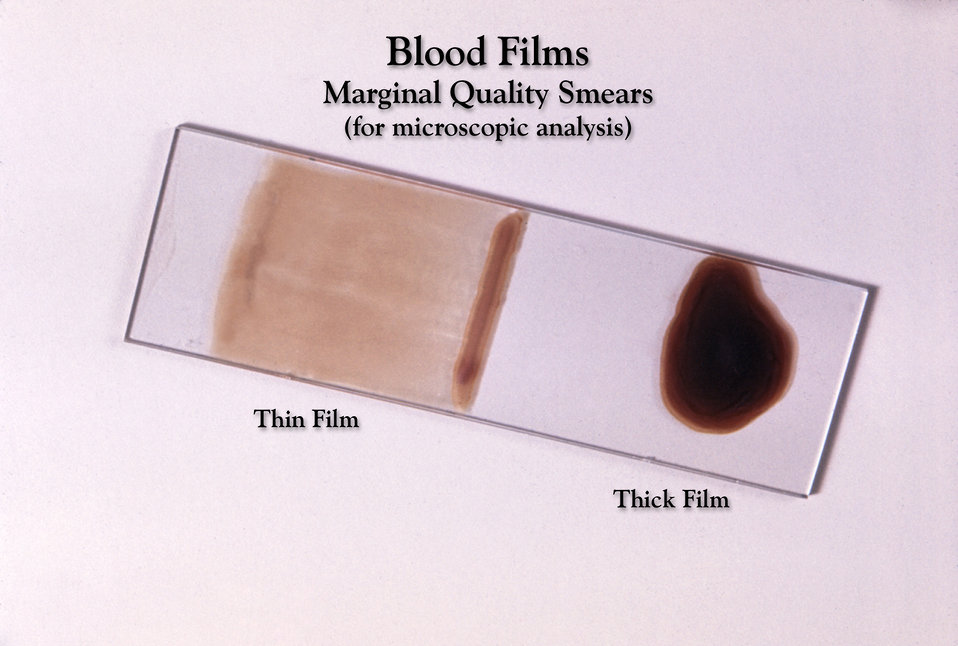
This prepared slide offers an example of the appearance of 'marginal quality' thick and thin film blood smears.